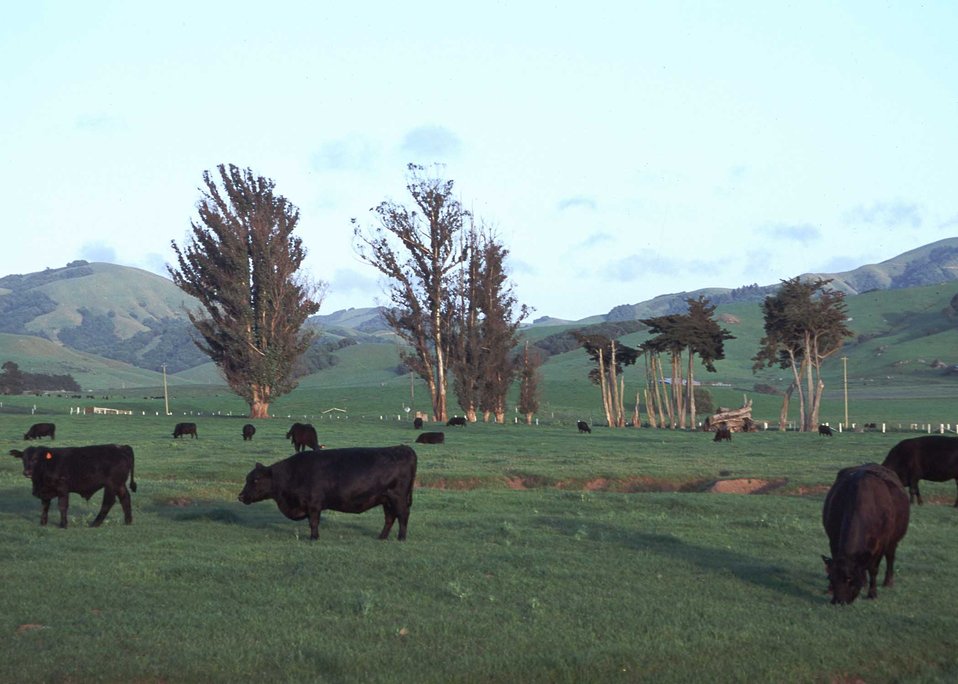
Cows in Sonoma County, CA.